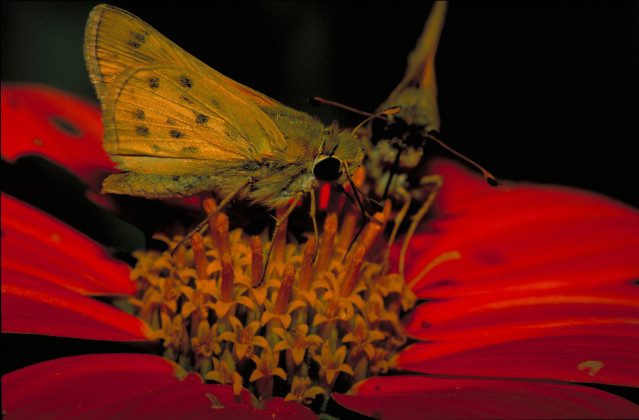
fiery skipper butterfly on Mexican sunflower